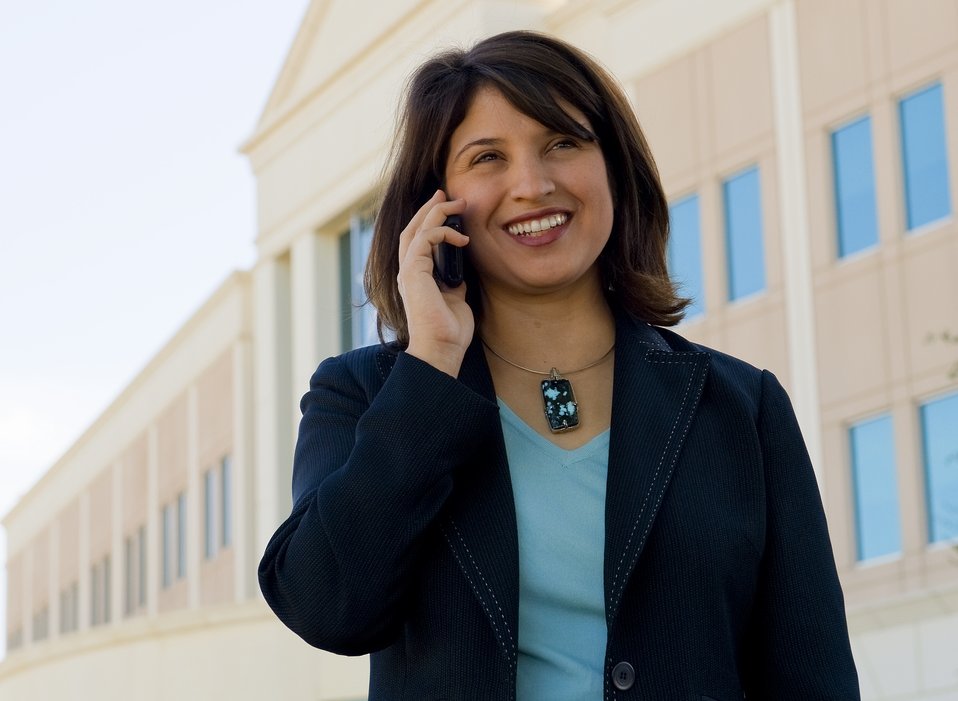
AF Spouse Raises Half a Million for Fisher House

Sonja McDonald talks on the phone Nov. 25 in San Antonio. She did a lot of talking during a six-week period in 2006 to raise $217,000 toward the construction, operation and maintenance of the two newest Fisher Houses in San Antonio. Mrs. McDonald is a vice-president of marketing at a local credit union.